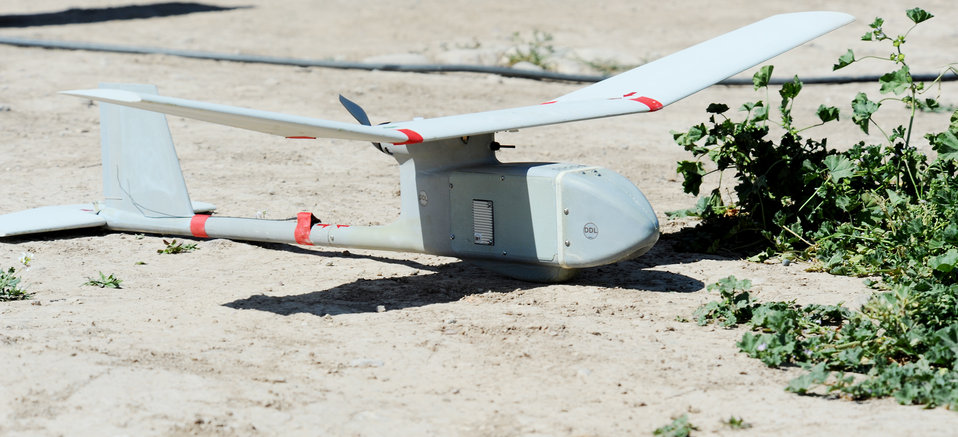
RQ-11B Raven

An RQ-11B Raven unmanned aerial vehicle rests on the ground after a fly-by conducted by members of the 506th Expeditionary Security Forces Raven team at Kirkuk Regional Air Base, Iraq, March 23, 2010. The Raven is remotely piloted by a mission operator and vehicle operator who work side by side to coordinate on what they are seeing and what direction the device is flying.